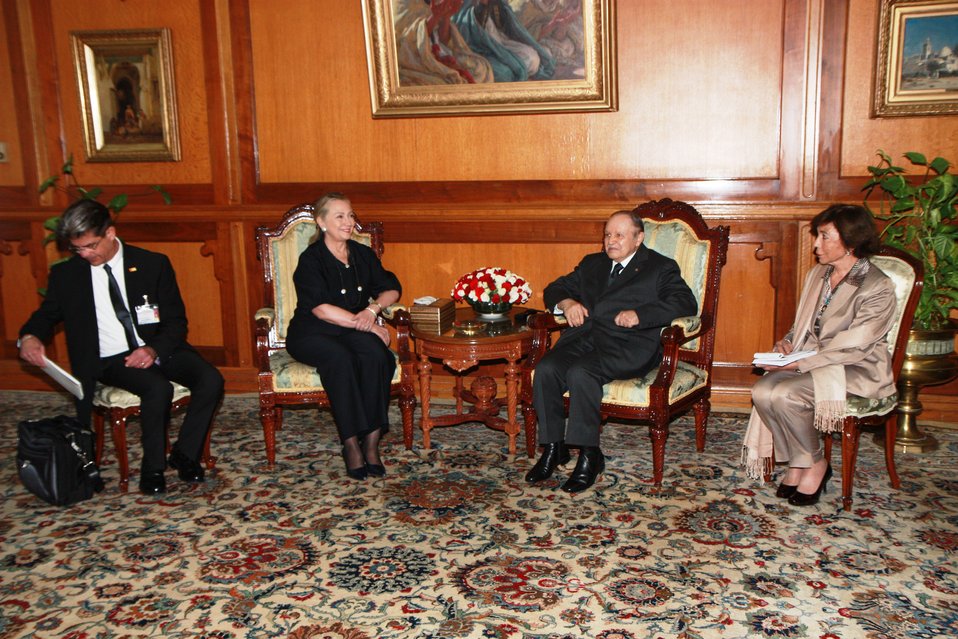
Secretary Clinton Meets With Algerian President Bouteflika

U.S. Secretary of State Hillary Rodham Clinton meets with Algerian President Abdelaziz Bouteflika in Algiers, Algeria, October 29, 2012.